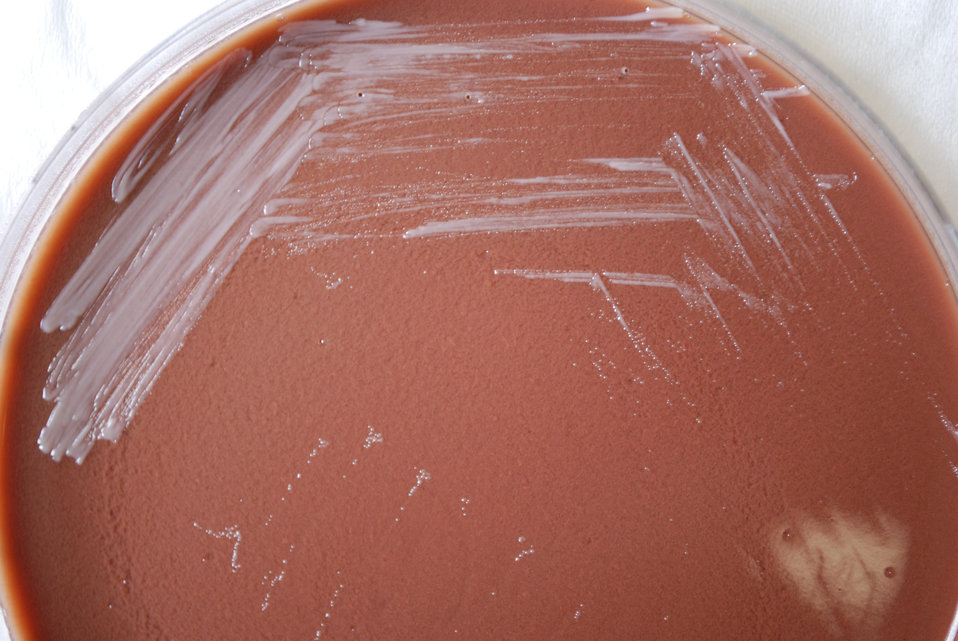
An enlarged view of PHIL 12258, this photograph depicts the colonial morphology displayed by Gram-negative Brucella abortus bacteria, which was been grown on a medium of chocolate agar, for a 48 hour time period, at a temperature of 37�C. This Petri dish and its contents were incubated in a CO2 incubator.How is brucellosis transmitted to humans, and who is likely to become infected?